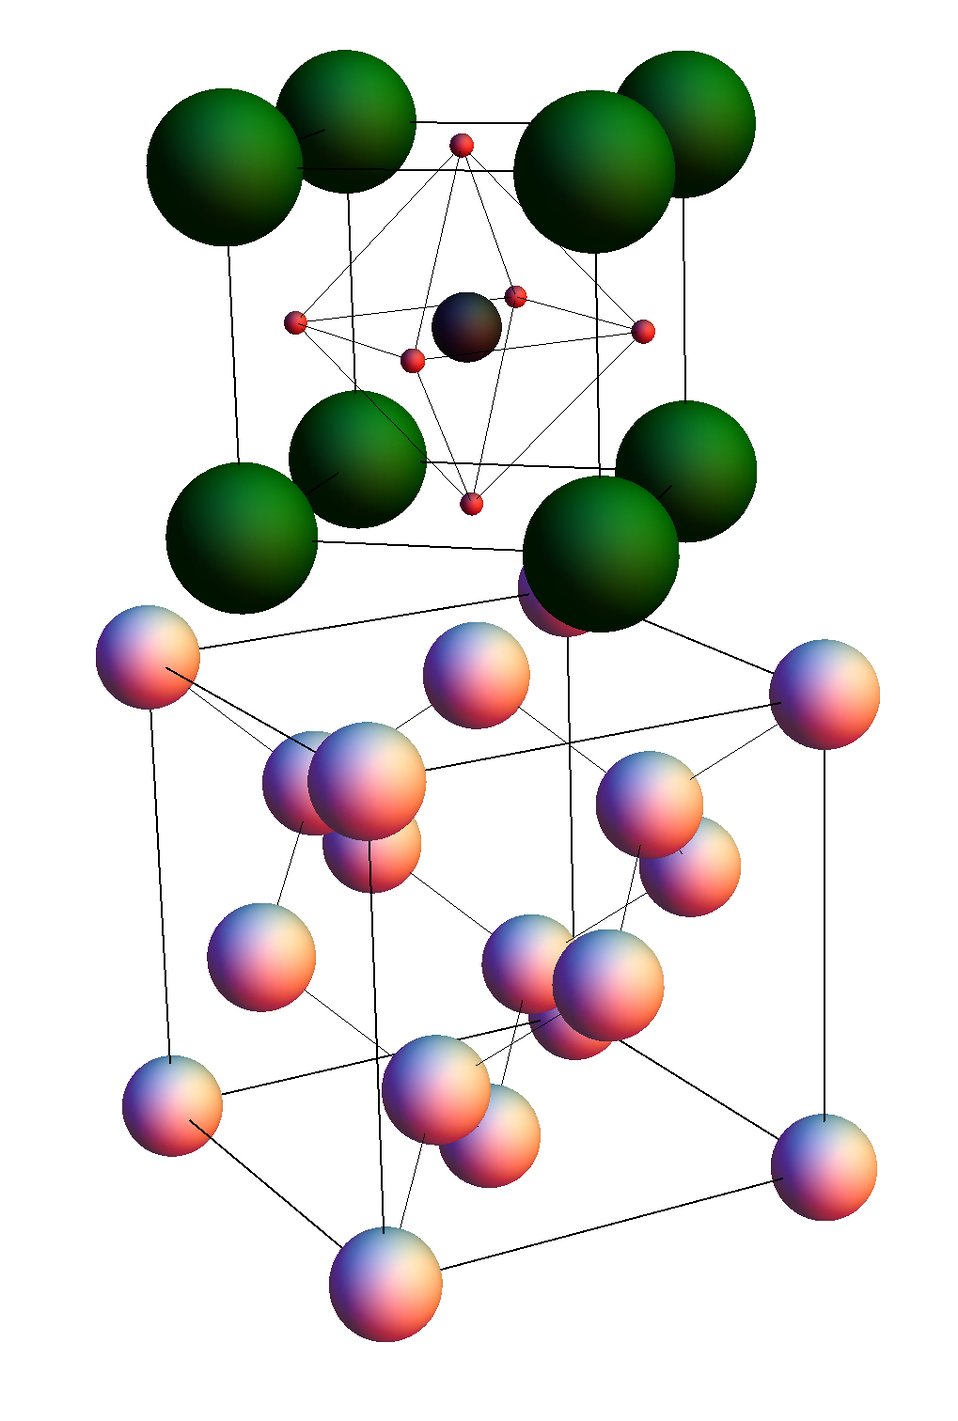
Nanoscale Vise